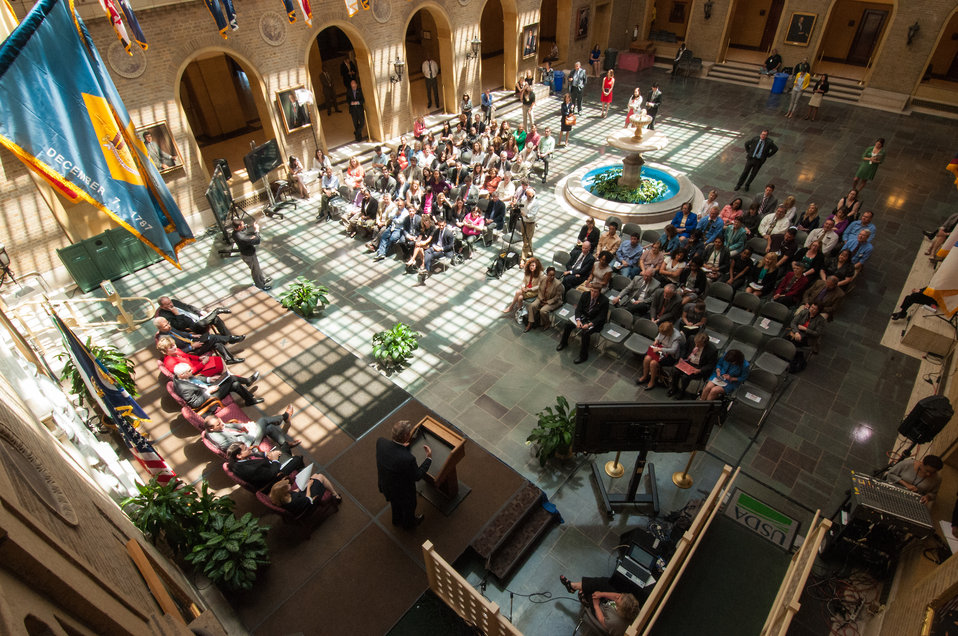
Agriculture Secretary Tom Vilsack answers questions at the launching of the U.S. Food Waste Challenge held at the U.S. Department of Agriculture (USDA) in Washington, D.C. on Tuesday, Jun. 4, 2013. The U.S. Food Waste Challenge is a nationwide effort by USDA and the Environmental Protection Agency (EPA) to reduce, recover and recycle U.S. food waste. Representatives from Gills Onions/Rio Farms, Unilever, Food Marketing Institute, National Restaurant Association, Grocery Manufacturers Association, Food Waste Reduction Alliance, Feeding America and Rock and Wrap It Up! were also present.